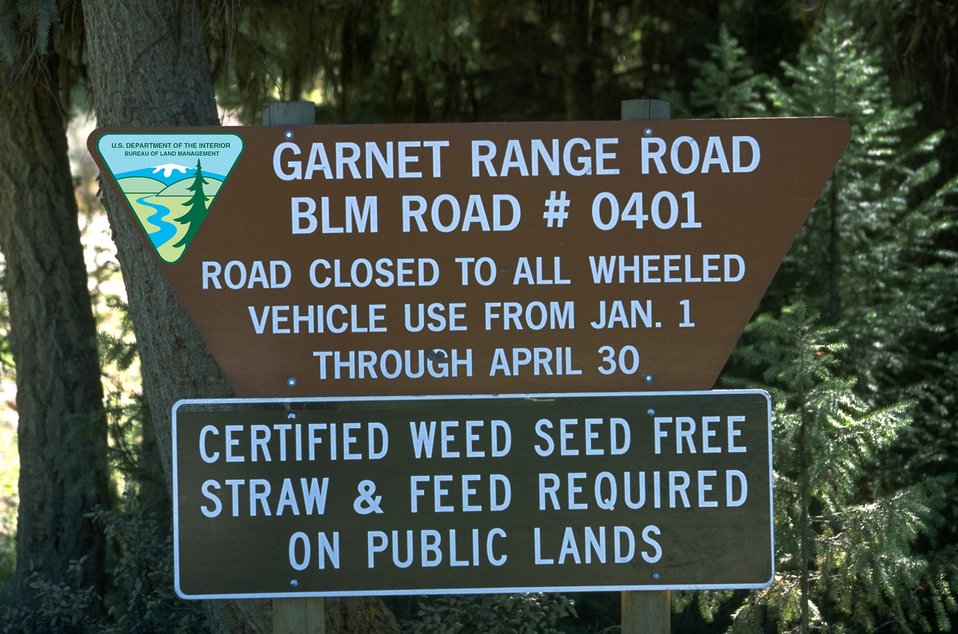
Garnet Back County Byway sign with OHV rules